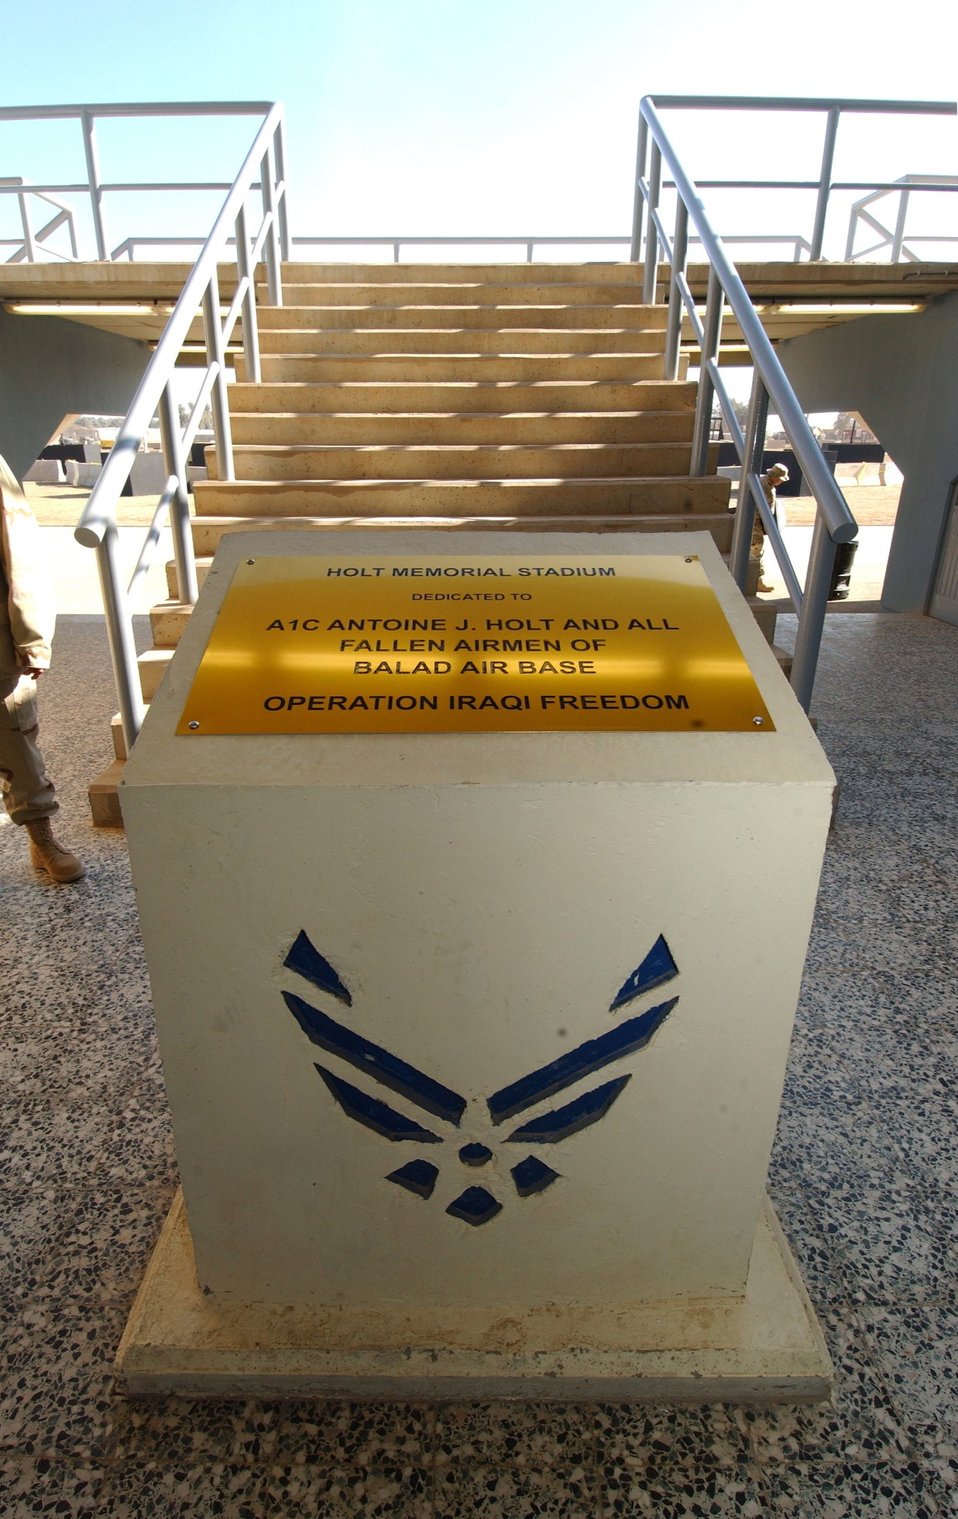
Stadium dedicated to fallen Airman

BALAD AIR BASE, Iraq -- A memorial was dedicated here Dec. 15 to honor Airman 1st Class Antoine J. Holt and all fallen Airmen from Balad. The base stadium here was renamed for Airman Holt who was killed in April during an attack on the base. Airman Holt was a control technician in the 332nd Expeditionary Air Control Squadron.